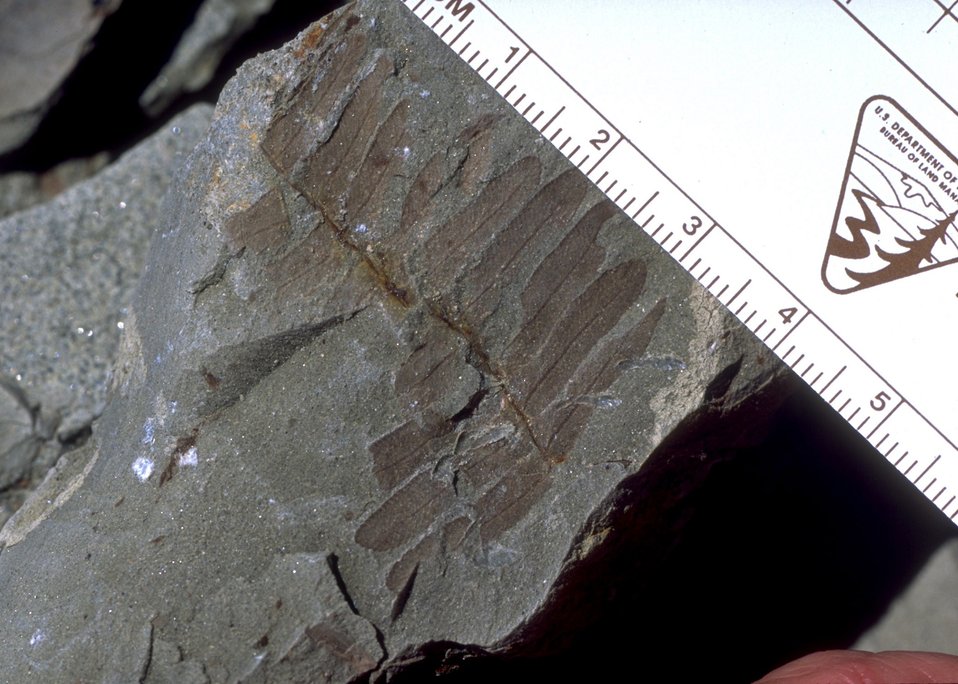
Close up of fossil vegetation, Cedar Ridge Paleo area, Worland Field Office.